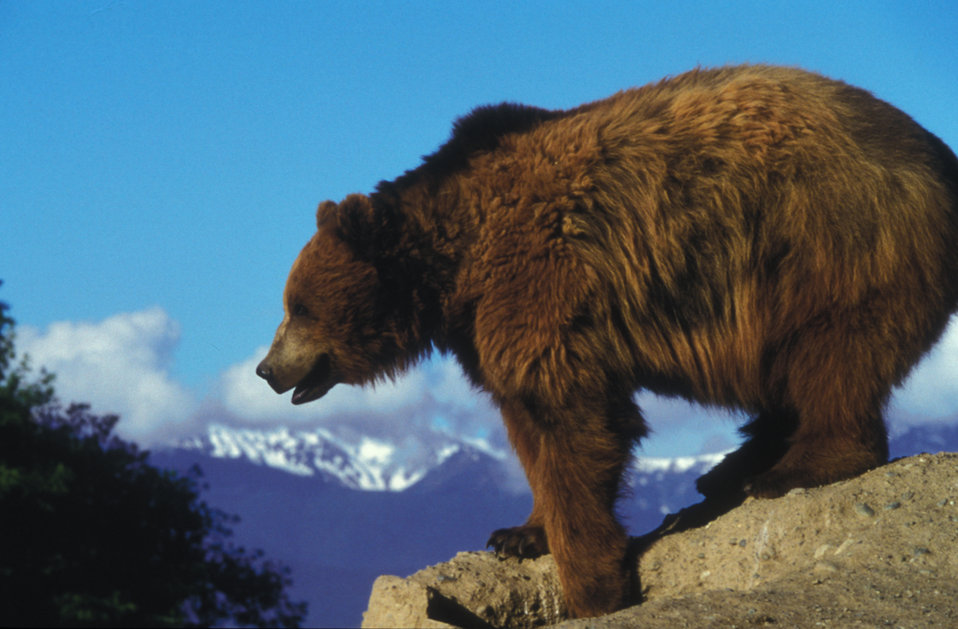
A grizzly bear on a rock overlooking the Glacier National Park.